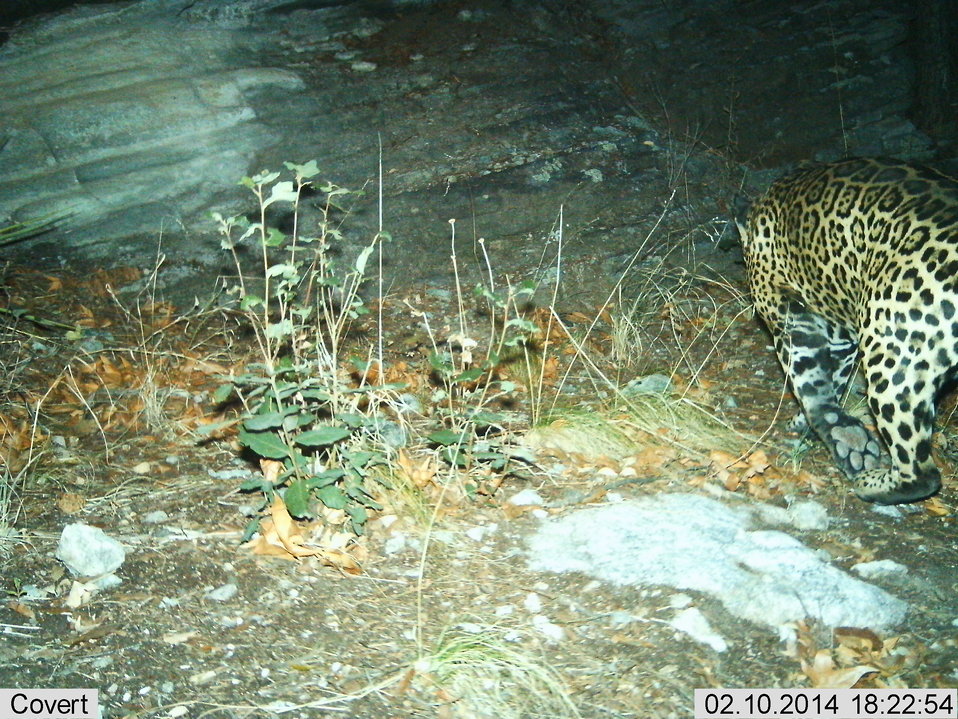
Male Jaguar

UA Jaguar 2014-02-10 (18.22).jpg] Male jaguar photographed by automatic wildlife cameras in the Santa Rita Mountains on February 10, 2014, as part of a U.S. Fish and Wildlife Service/Department of Homeland Security-funded jaguar survey conducted by University of Arizona. The jaguar has been photographed previously at this location.